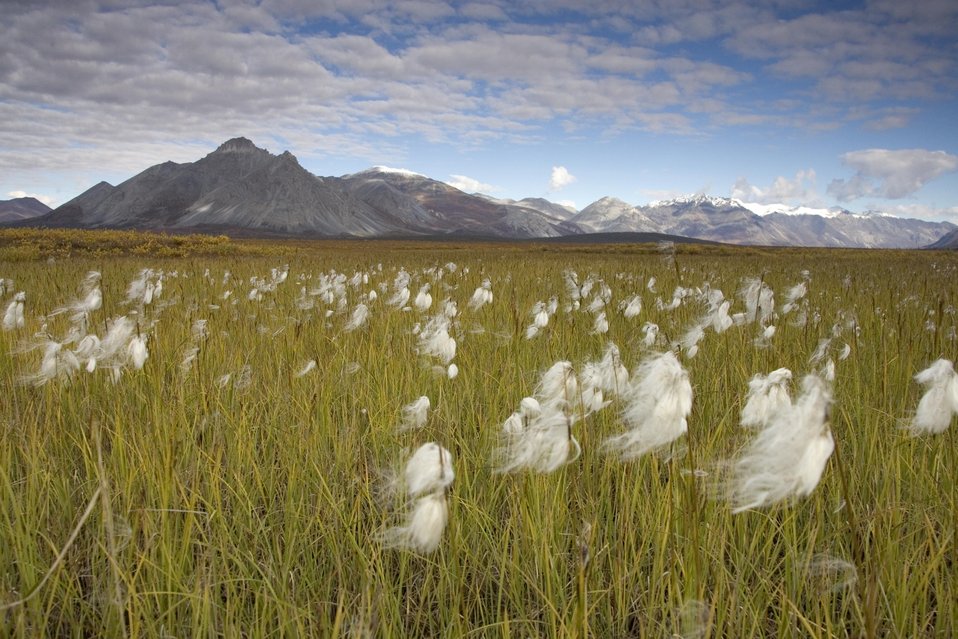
ARC Hildebrand (46)

Arctic National Wildlife Refuge
USFWS/Hildebrand